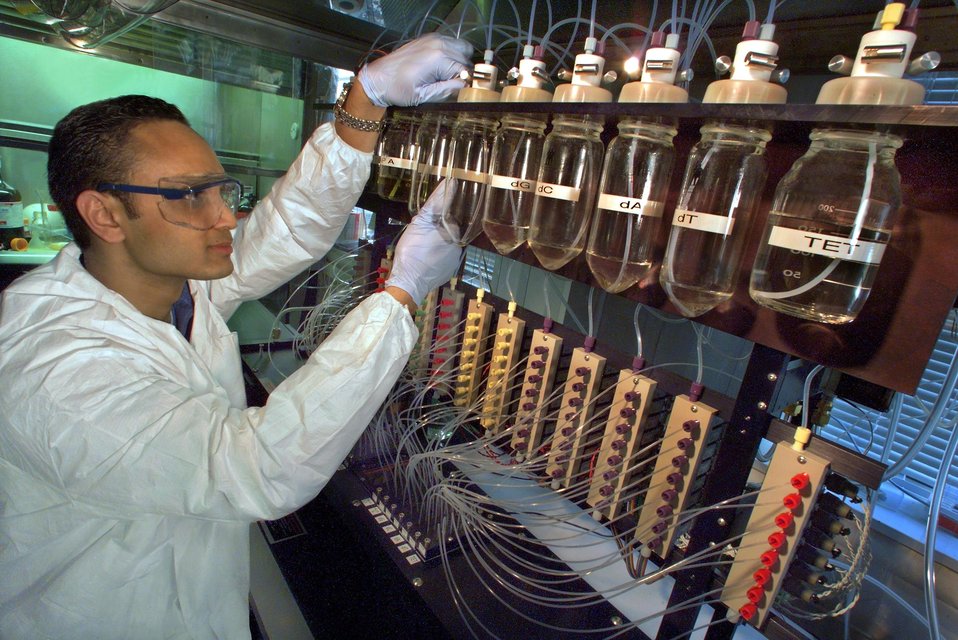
LOADING DAMOS (DUAL-PLATE AUTOMATIC MULTICHANNEL OLIGONUCLEOTIDE SYNTHESIZER.)